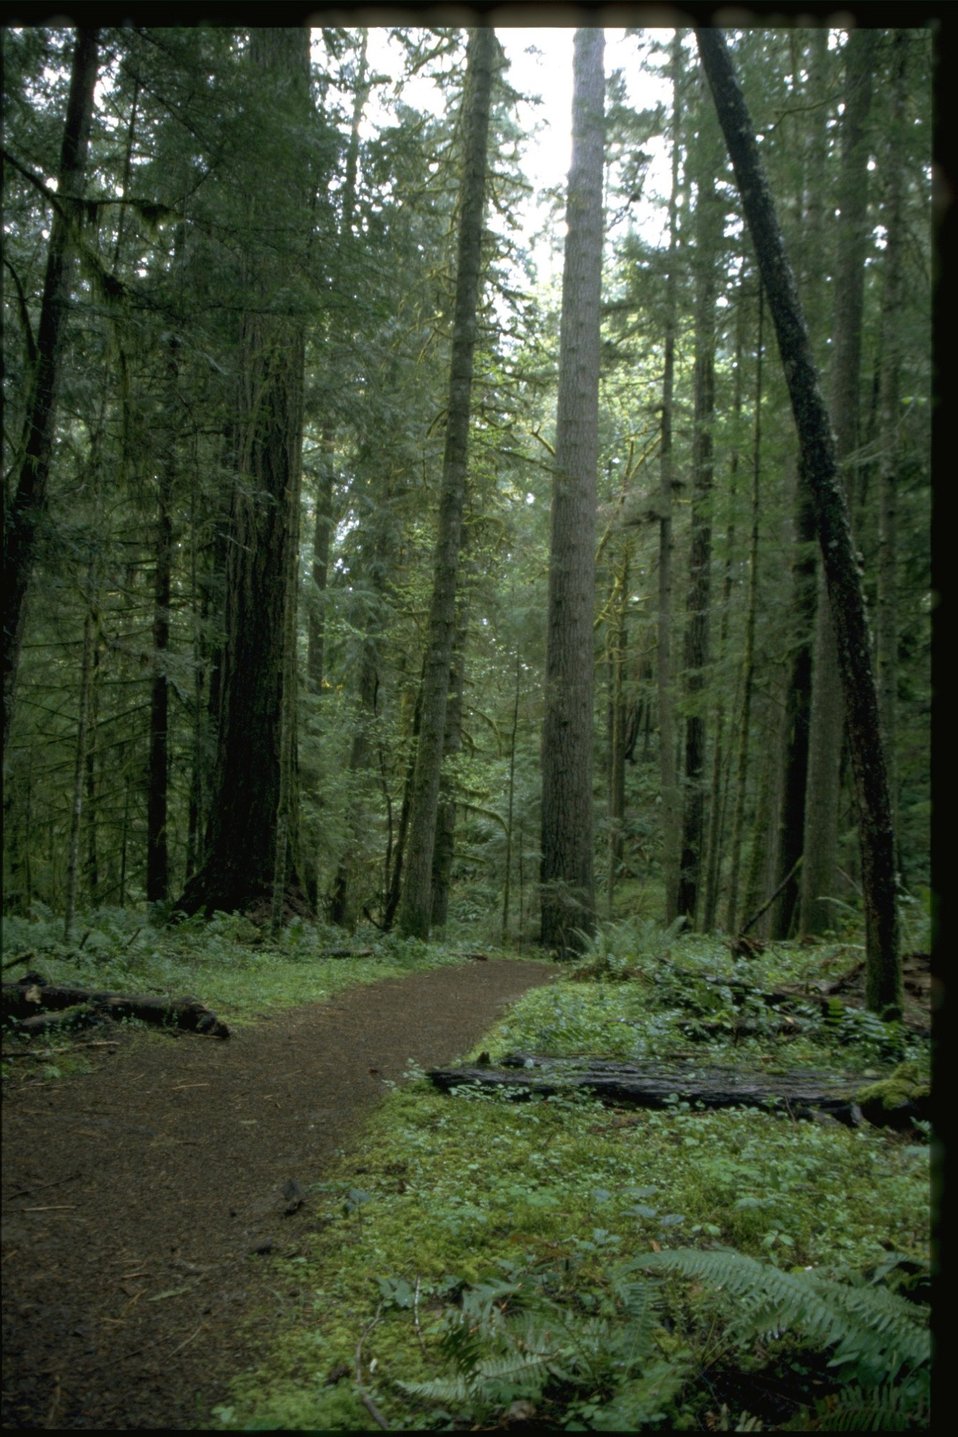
Recreation trail.